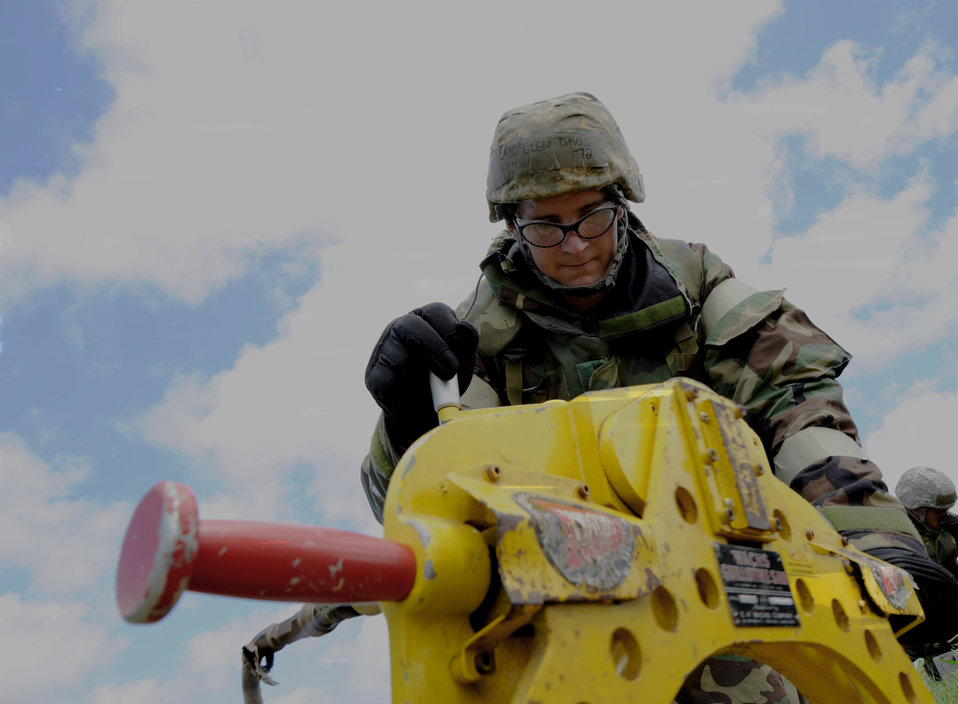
Silver Flag

Airman 1st Class Glen Davis uses a piping saw to cut a broken pipeline June 28, 2011, during Silver Flag at Kadena Air Base. Airman Davis is a water and fuel maintenance apprentice assigned to the18th Civil Engineer Squadron.